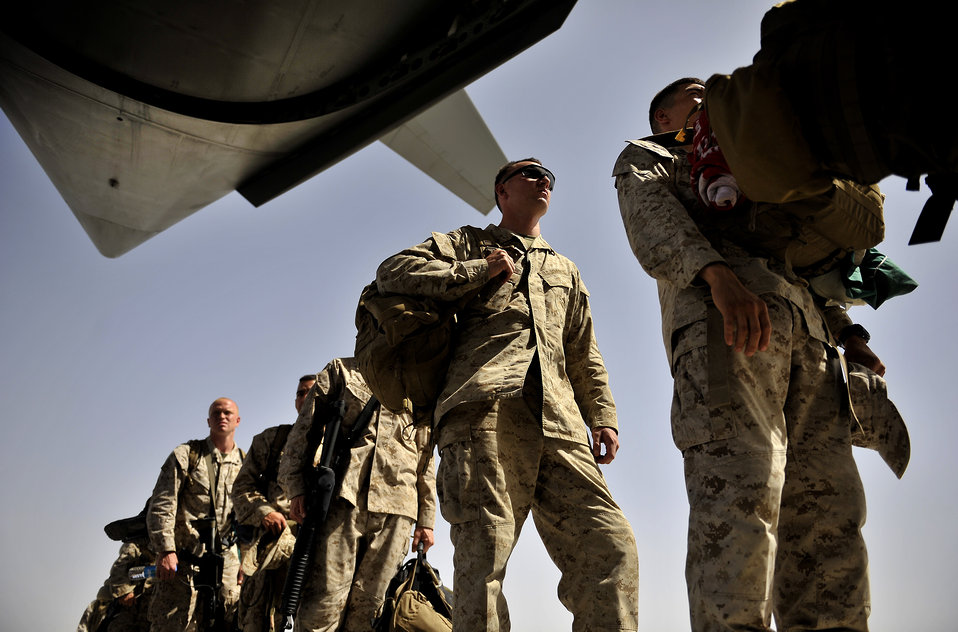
Bringing them home

U.S. Marines board an Air Force C-17 Globemaster III during a redeployment mission at Camp Bastion Airfield, Afghanistan, Sept. 11, 2012. The U.S. military is drawing down forces in Afghanistan and redeploying combat forces while transitioning security control to the Afghan National Security Forces. The ANSF and U.S. forces have worked closely and effectively to transition control of security in Afghanistan.